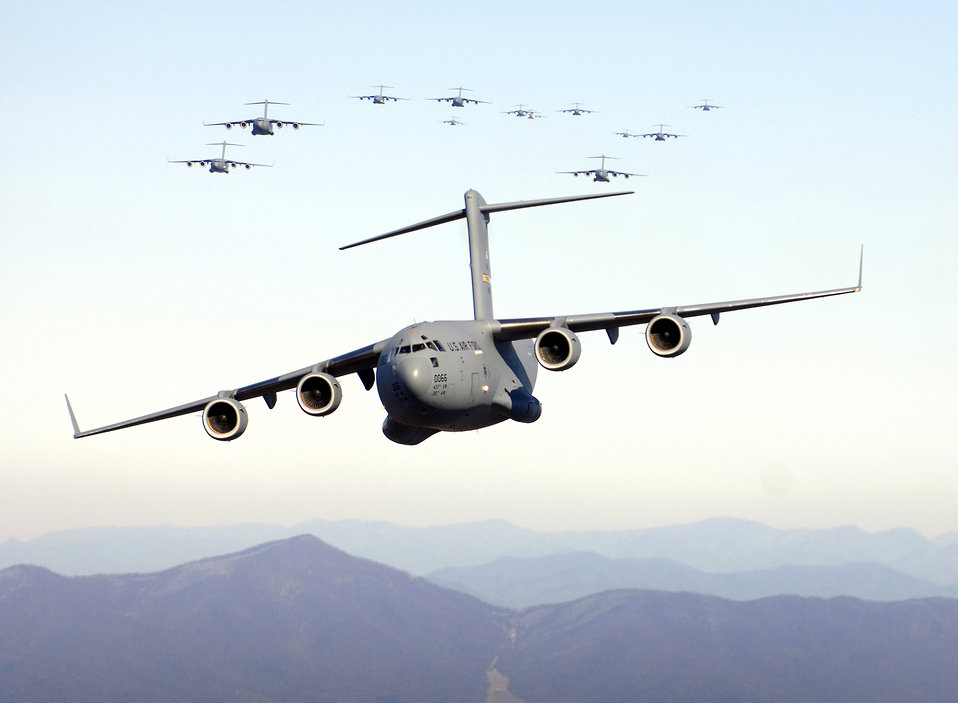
C-17 record breaking flight

CHARLESTON, S.C. (AFPN) -- A formation of 17 C-17 Globemaster IIIs fly over the Blue Ridge Mountains in Virginia during low-level tactical training. The C-17s, assigned to the 437th and 315th Airlift Wings here, were part of the largest formation in history from a single base and demonstrated the strategic airdrop capability of the Air Force.